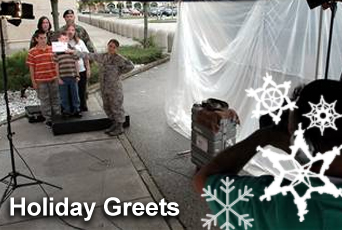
Television holiday greetings available online

The holiday greetings program provides servicemembers away from home the chance to send a holiday message to those they can't be with this time of year. Traditionally seen on TV, many greetings now can be seen online.